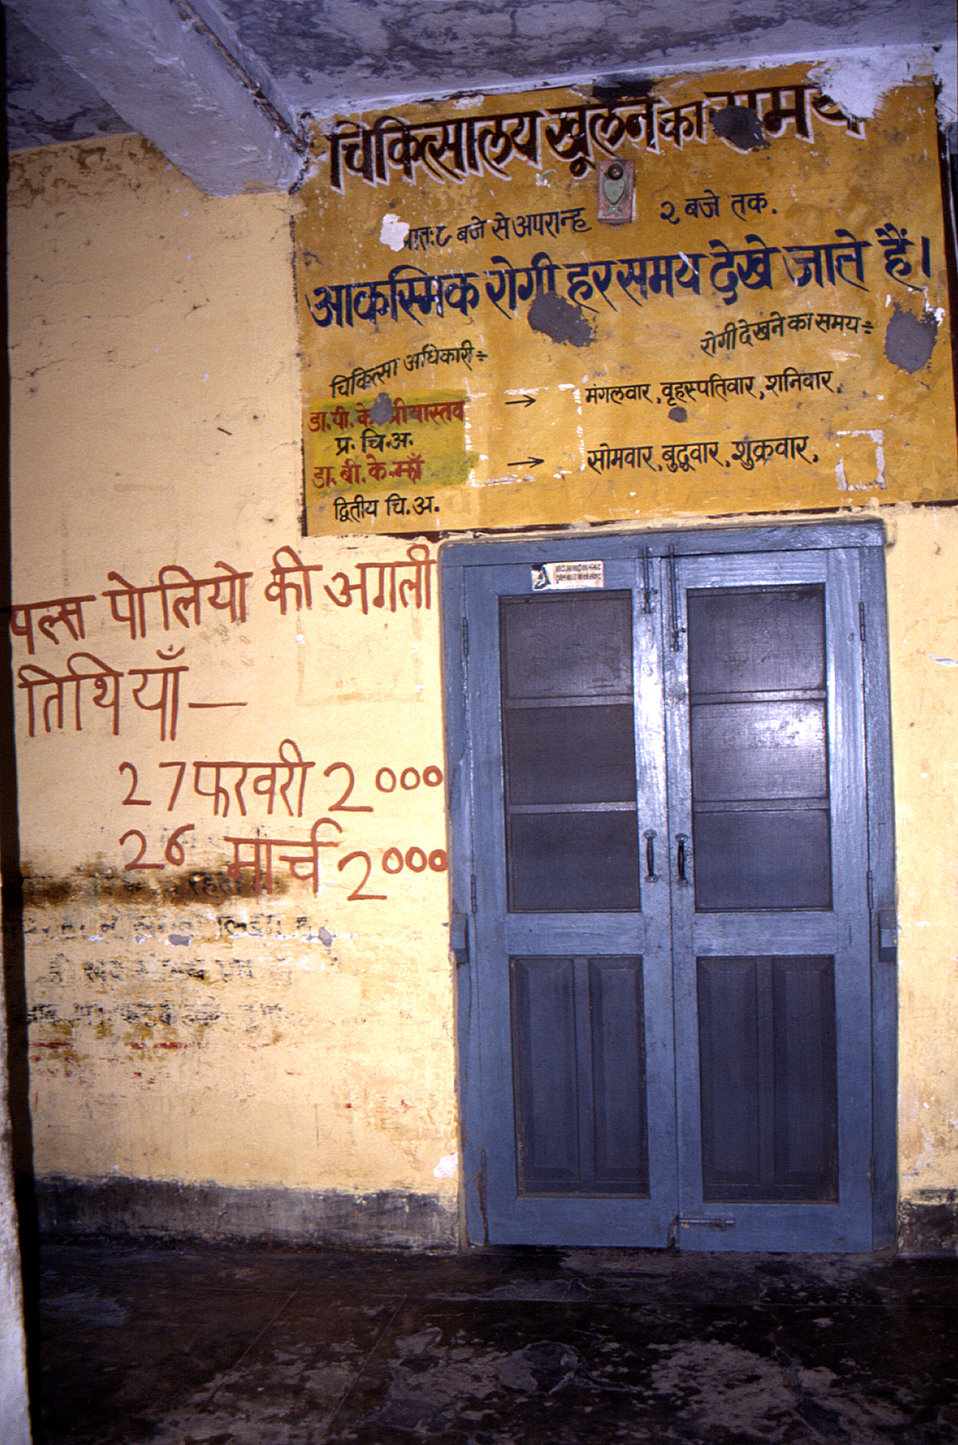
The Stop Transmission of Polio (STOP) Initiative was part of the Stop Polio Campaign of 2000, which was a global effort to eradicate polio, and was the largest public health initiative in history. The initiative was established in 1988 by the World Health Assembly with its main goal being that of the eradication of polio, while strengthening the worldwide capacity to control other major childhood diseases. Following each National Immunization Day (NID), health workers visited each home in a given District, in order to verify that all children under 5 years of age had received the polio vaccine. Written outside the door of this house were the dates indicating when the home had been visited, and that the children had been properly immunized.